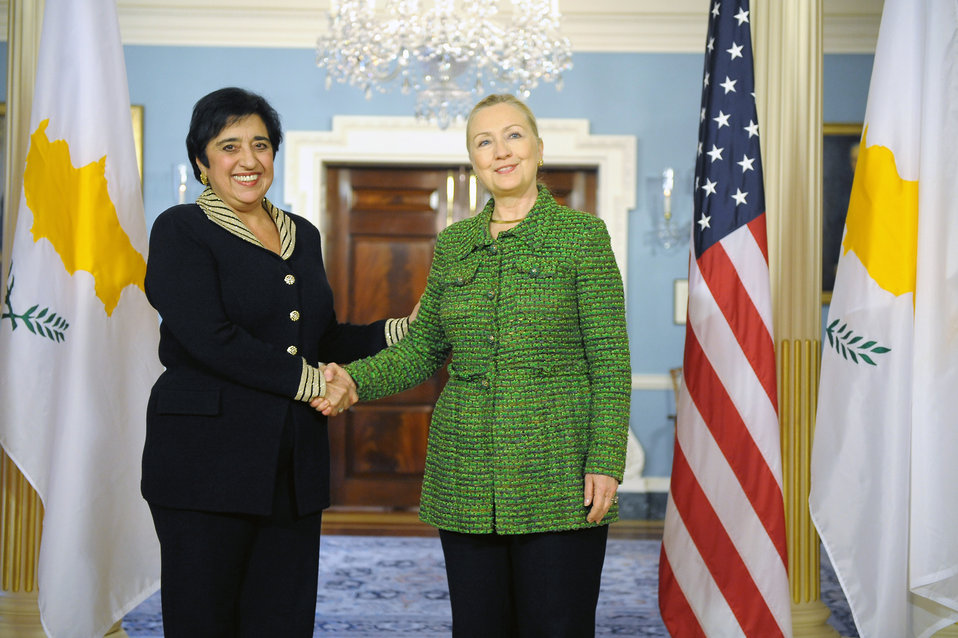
Secretary Clinton Meets With Cypriot Foreign Minister Kozakou-Markoullis

U.S. Secretary of State Hillary Rodham Clinton meets with Cypriot Foreign Minister Erato Kozakou-Markoullis at the U.S. Department of State in Washington, D.C., on December 20, 2011.